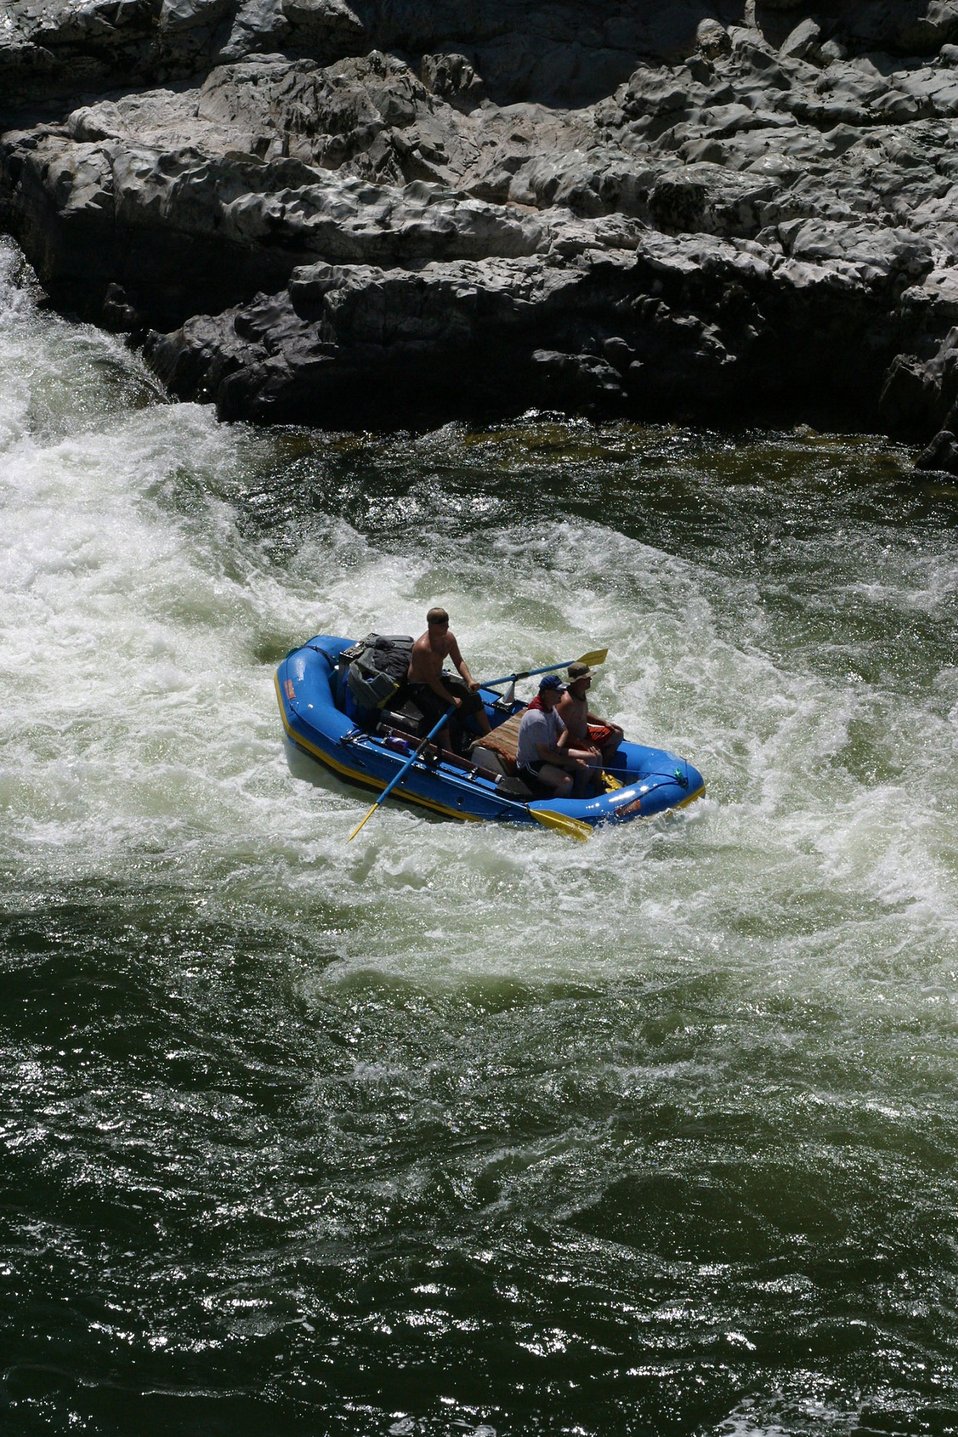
Boater at Grave Creek Falls